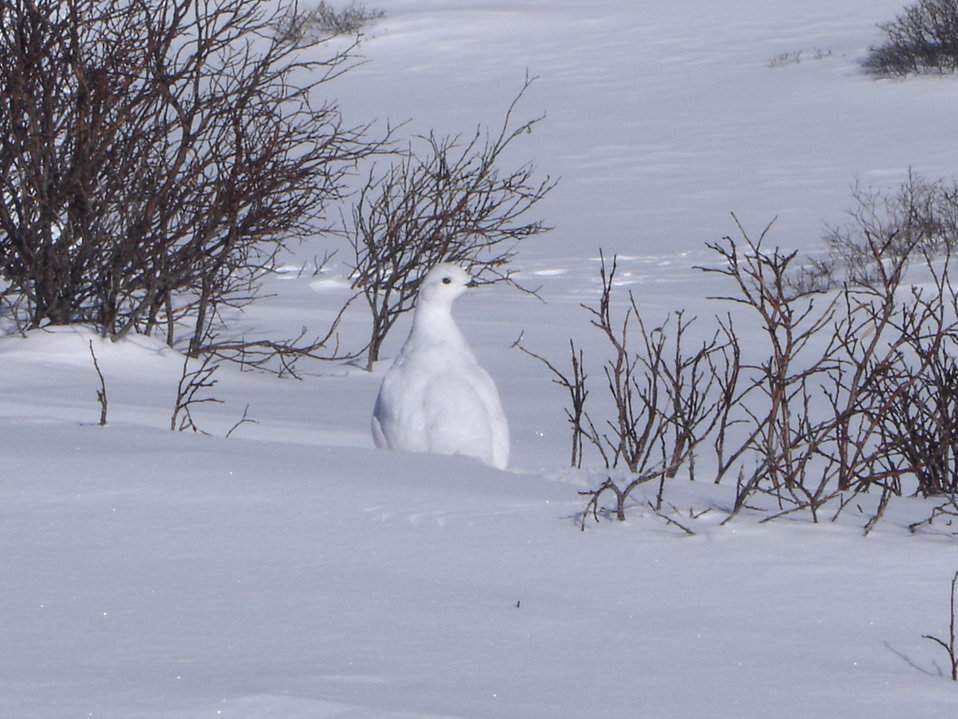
White-tailed Ptarmigan on Guanella Pass in Winter

Male and female white-tailed ptarmigan share similar body size, shape, and winter plumage, with adult body lengths up to 13.4 inches (34 centimeters) and body masses up to 0.9 pound (425 grams). Both the southern and Mt. Rainier white-tailed ptarmigan are white in winter and brown in summer, the feathers changing color with the seasons to camouflage the birds. Although the body feathers change color, the white-tailed ptarmigan is named for its perpetually white tail feathers, a morphological trait that distinguishes it from other ptarmigan species. During the winter, males and females are stark white and difficult to distinguish from the background of snow. In the summer during the breeding season, males turn a lighter color of brown or gray than females and develop a dark band of feathers on the breast that resembles a necklace.

During the winter, the southern and Mt. Rainier white-tailed ptarmigan feed on exposed willows above the snow and dig roosts, or burrows, into the soft snow as protection from wind and weather. During the summer, the white-tailed ptarmigan feeds on willows and other alpine vegetation. White-tailed ptarmigan require cool temperatures, rocky areas, soft snow, and the presence of willows. The southern and Mt. Rainier white-tailed ptarmigan spend their entire lifecycles in alpine habitats and are well adapted to survive in the cold, arid, and open alpine environments. Adaptations of the white-tailed ptarmigan to these alpine environments include its cryptic plumage, low metabolic rates, and heavily feathered feet that act as snowshoes.